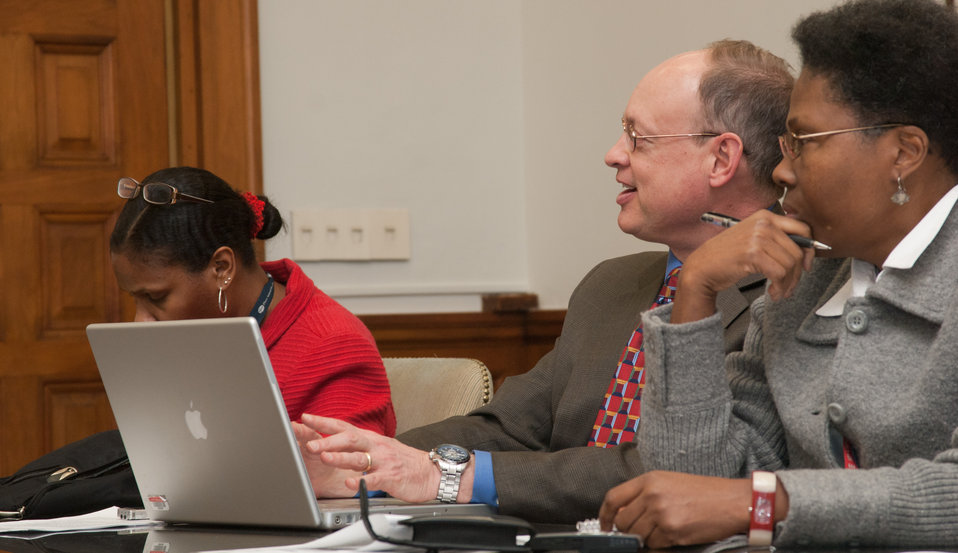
Des Moines Register correspondent Philip Brasher rephrases his question to Agriculture Secretary Tom Vilsack during a briefing on how the U.S. Department of Agriculture actions will support President Barrack Obama’s proposed budget, Monday, Feb.14, 2011, in Washington, D.C. In an effort to promote good government and streamline agency operations, a host of programs have been selected for reduction or termination. Secretary Vilsack said, “In the end we must cut to grow. And we are working to do it as responsibly as possible for American Agriculture and the American people.”